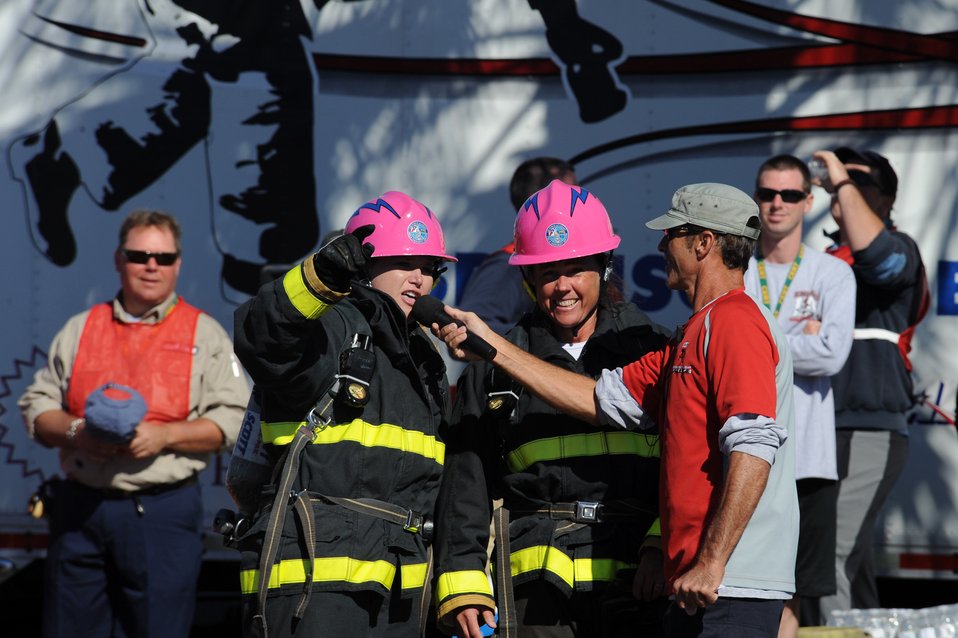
Air Force firefighters showcase skills in world competition

Senior Airman Jessica Morehouse and Stacy Billapando complete the team tandem event at the Scott Firefighter Combat Challenge in Myrtle Beach, S.C., on Nov. 13, 2010. Airman Morehouse is assigned to the Air Force Academy, Colorado Springs, Colo.